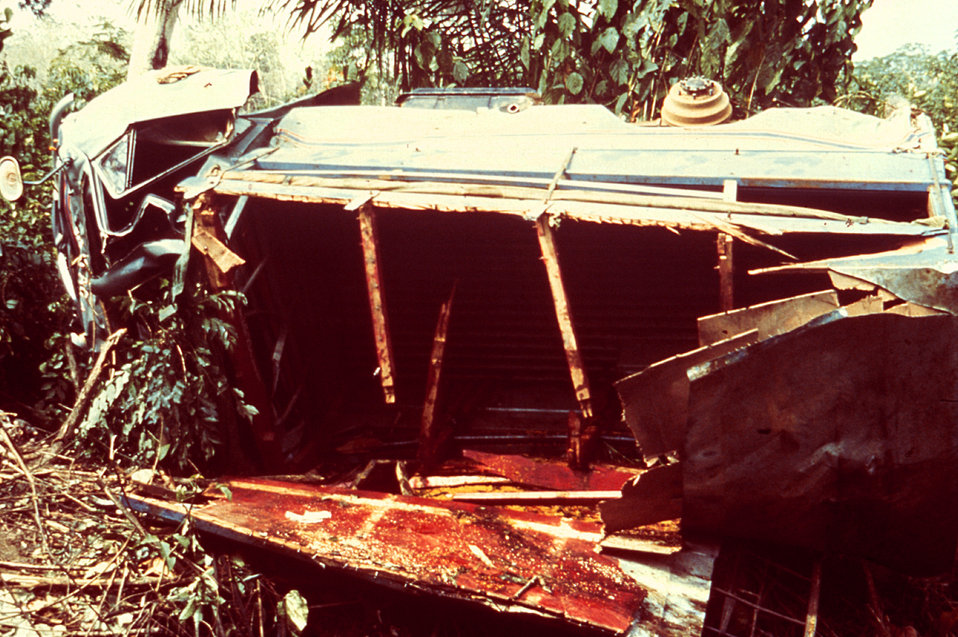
This 1977 image depicts a lorry accident in Mano Junction, Sierra Leone.